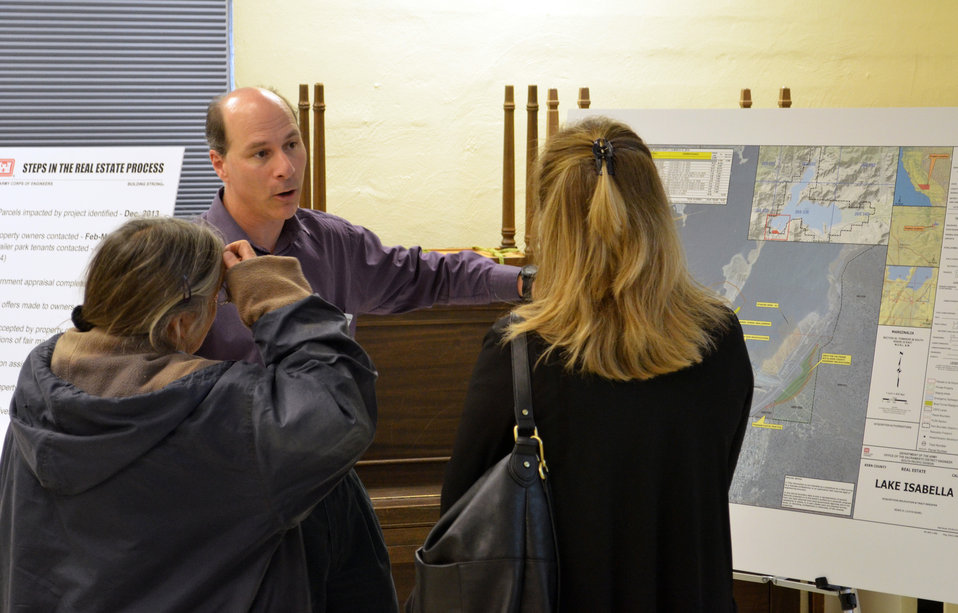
Corps meets with Lake Isabella owners

Paul Zianno (center), chief of civil works for acquisition and management for the U.S. Army Corps of Engineers Sacramento District Isabella Lake Dam Safety Modification Project, discusses impacted properties and proposed real estate actions with local residents at a public meeting March 27, 2014 in Lake Isabella, Calif.